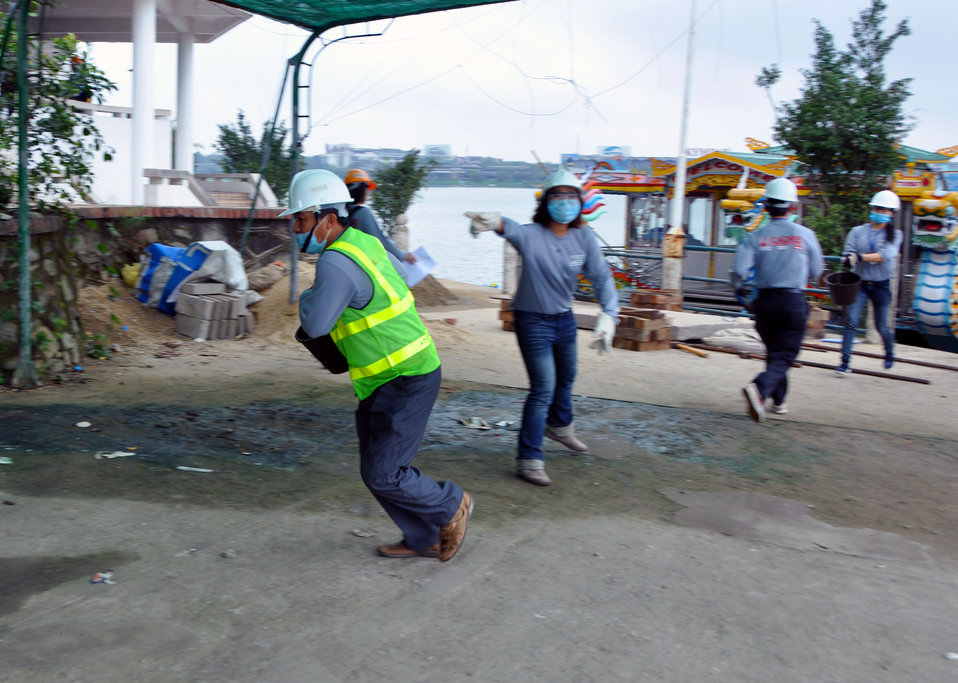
Disaster and Emergency Training Funded by USAID in Hue, Vietnam